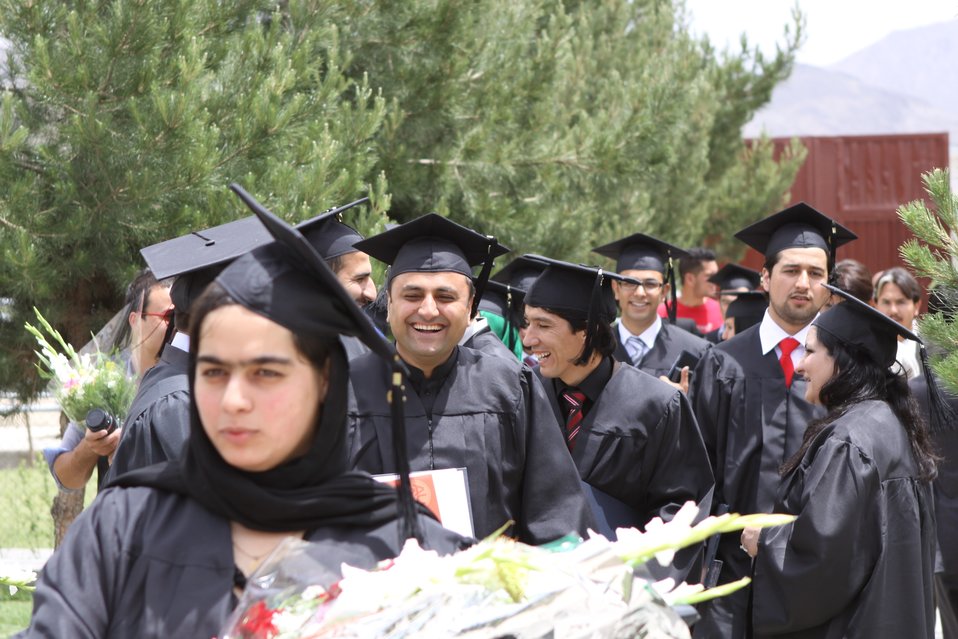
100526 AUAF Graduation 335